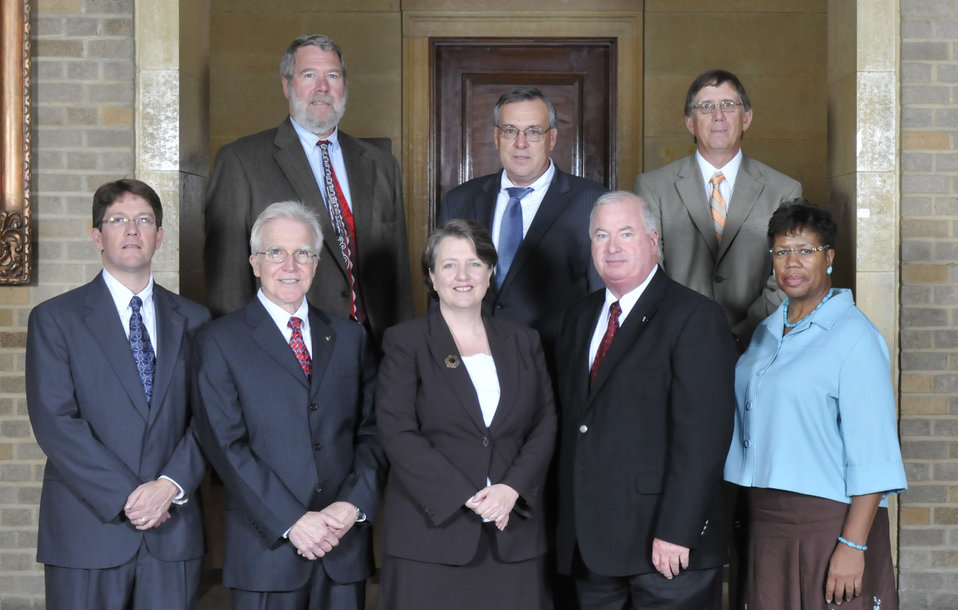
Soil Survey restructuring Team, Natural Resources Conservation Service, Washington, DC. Michael L. Golden, group Leader. For restructuring the Soil Survey Program to improve its efficiency, cost-effectiveness and responsiveness while also promoting a family friendly workplace for employees.
On September 14, 2011 in the patio of the Whitten Building Patio of the US Department of Agriculture in Washington, DC.